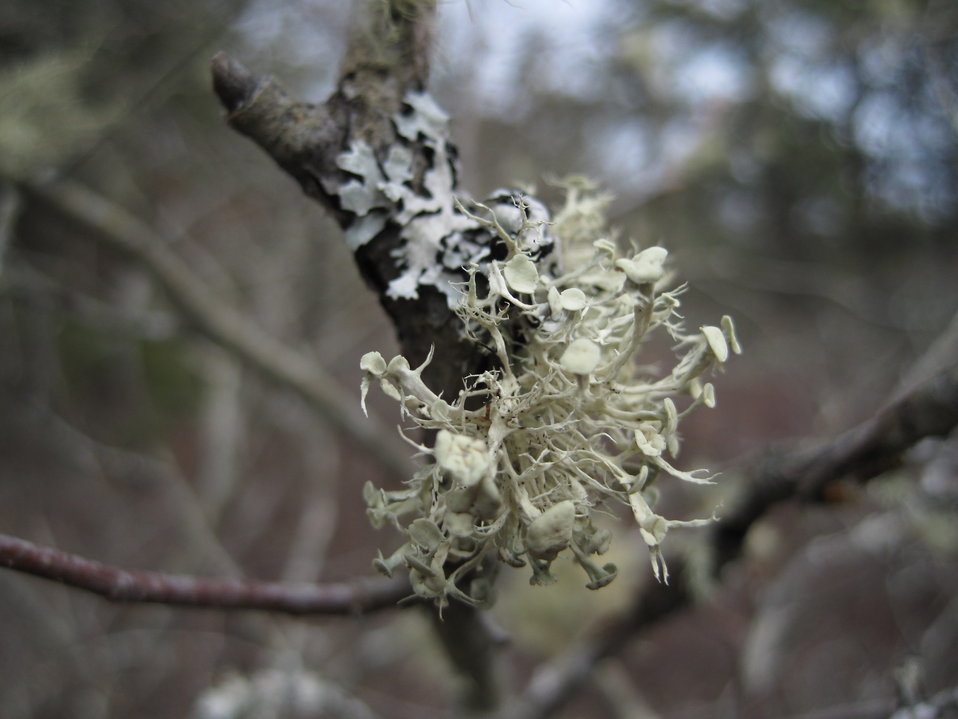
Monomoy National Wildlife Refuge

Picture from the Morris Island Trail.

Credit: Keith Shannon/USFWS

Monomoy National Wildlife Refuge is part of the Eastern Massachusetts National Wildlife Refuge Complex.